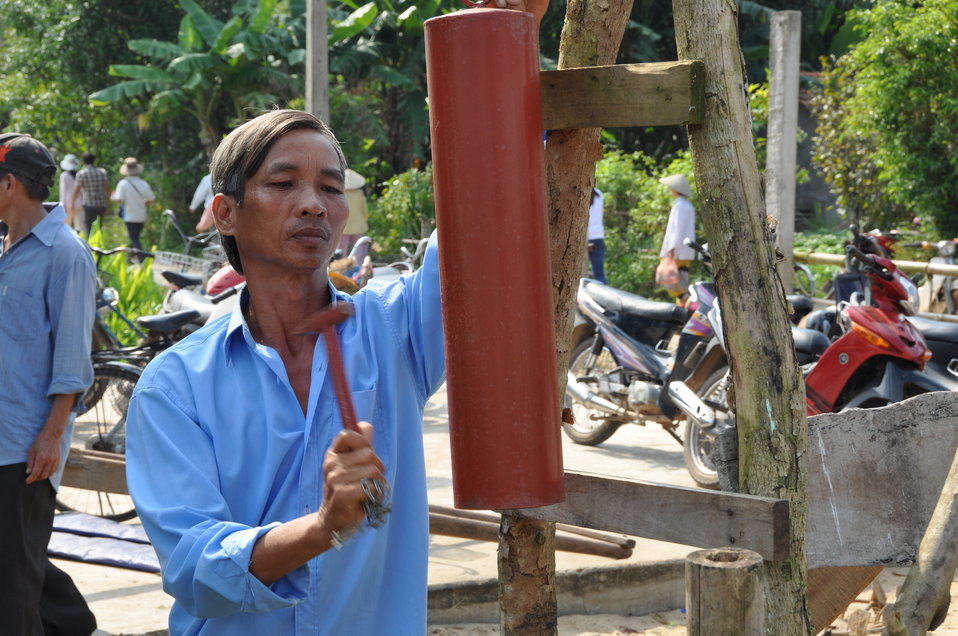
USAID, Red Cross Support Disaster Response Drill in Duy Hoa Commune, Quang Nam Province

Duy Hoa Commune, Quang Nam Province
December 5, 2012